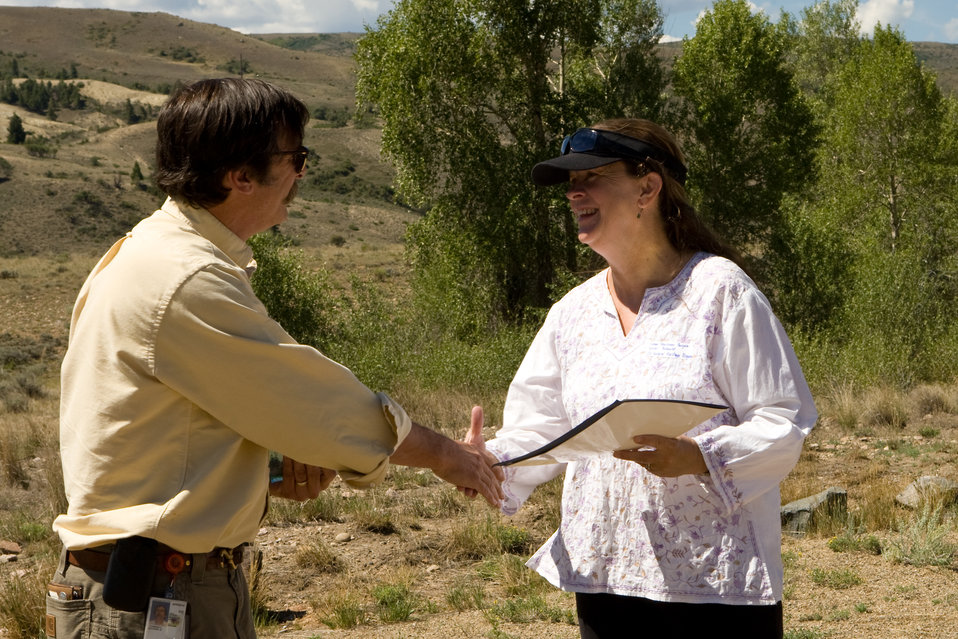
Colorado Rare Plant Conservation Initiative

The Colorado Rare Plant Conservation Initiative (RPCI) is a partnership of 23 statewide and regional agencies, private organizations, and academic institutions working to conserve 121 rare plants in Colorado. As part of these efforts the group developed the Colorado Rare Plant Conservation Strategy, developed Best Management Practices to reduce energy development impacts, addressed climate change, and developed focused strategies for the conservation of individual species at eight priority landscapes. The group has also worked to coordinate volunteer efforts for plant conservation across the state.